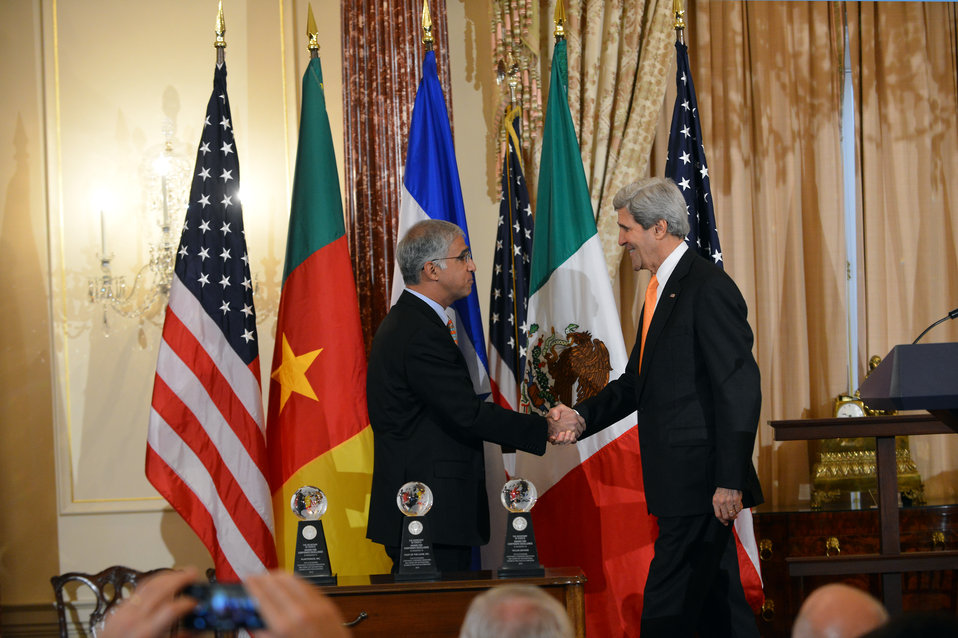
Secretary Kerry Shakes Hands With CEO Kannappan of Plantronics, Inc.

U.S. Secretary of State John Kerry shakes hands with Kenneth Kannappan, the CEO of Plantronics, Inc. in Mexico, which received the first-ever Secretary of State's Award for Corporate Excellence for a medium-sized business, at the U.S. Department of State in Washington, D.C., on January 29, 2014.